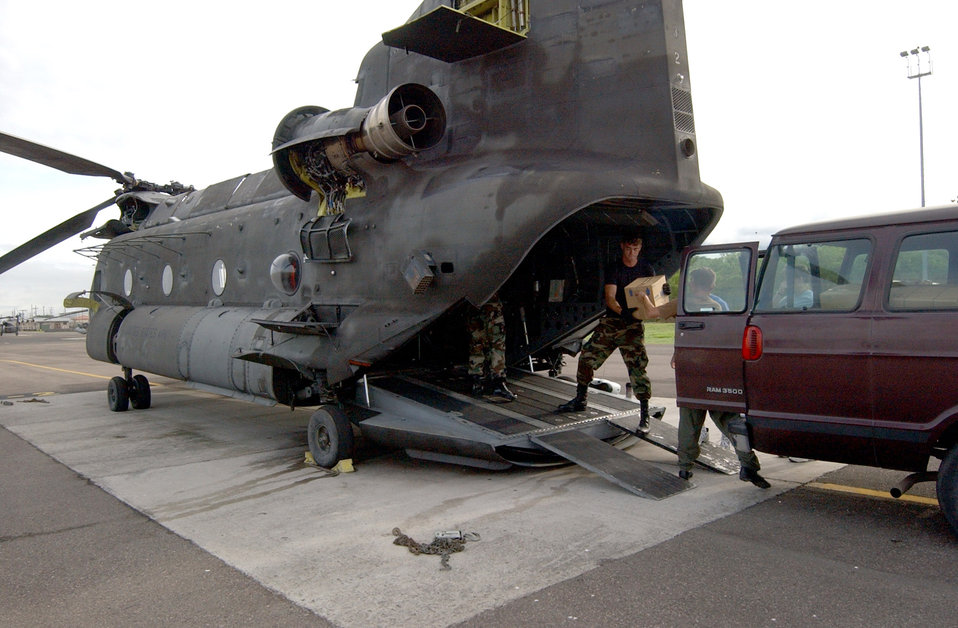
Medics help poisoning victims in Nicaragua

Airmen and Soldiers load water, Meals, Ready to Eat, and medical equipment into a CH-47 Chinook helicopter Sept. 10. More than 20 servicemembers responded to a request for help from the U.S. Embassy in Nicaragua after more than 30 people died in the city of Leon from a toxic batch of moonshine laced with methanol.